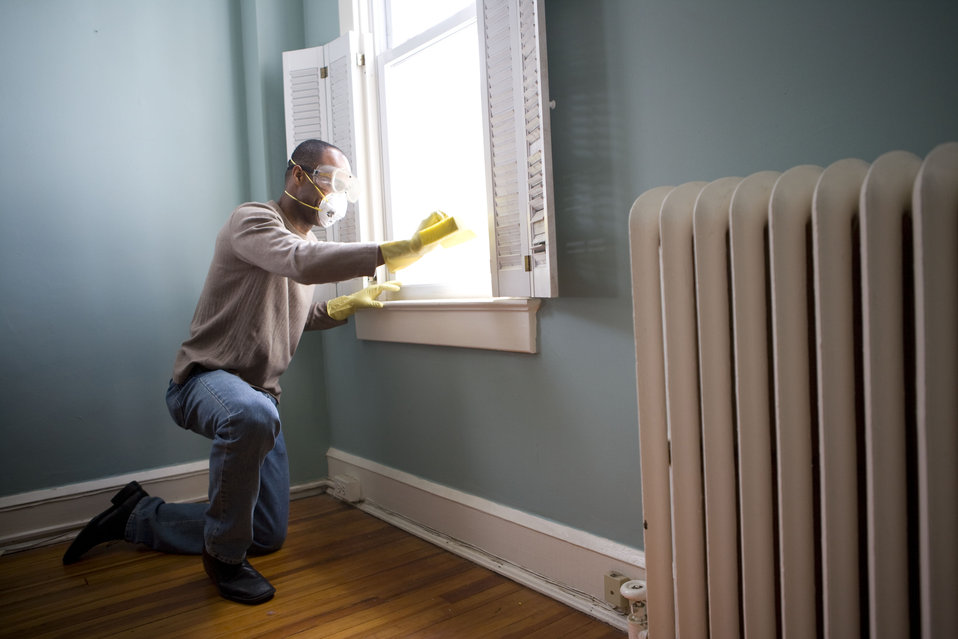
When renovating a home, you should use a damp sponge or cloth to clean dust collected on a window sill, as the dust may contain asbestos or lead-based paint. Home maintenance is an ongoing process for any homeowner, and here we see an African-American man as he was preparing a window in his home for a general cleaning.